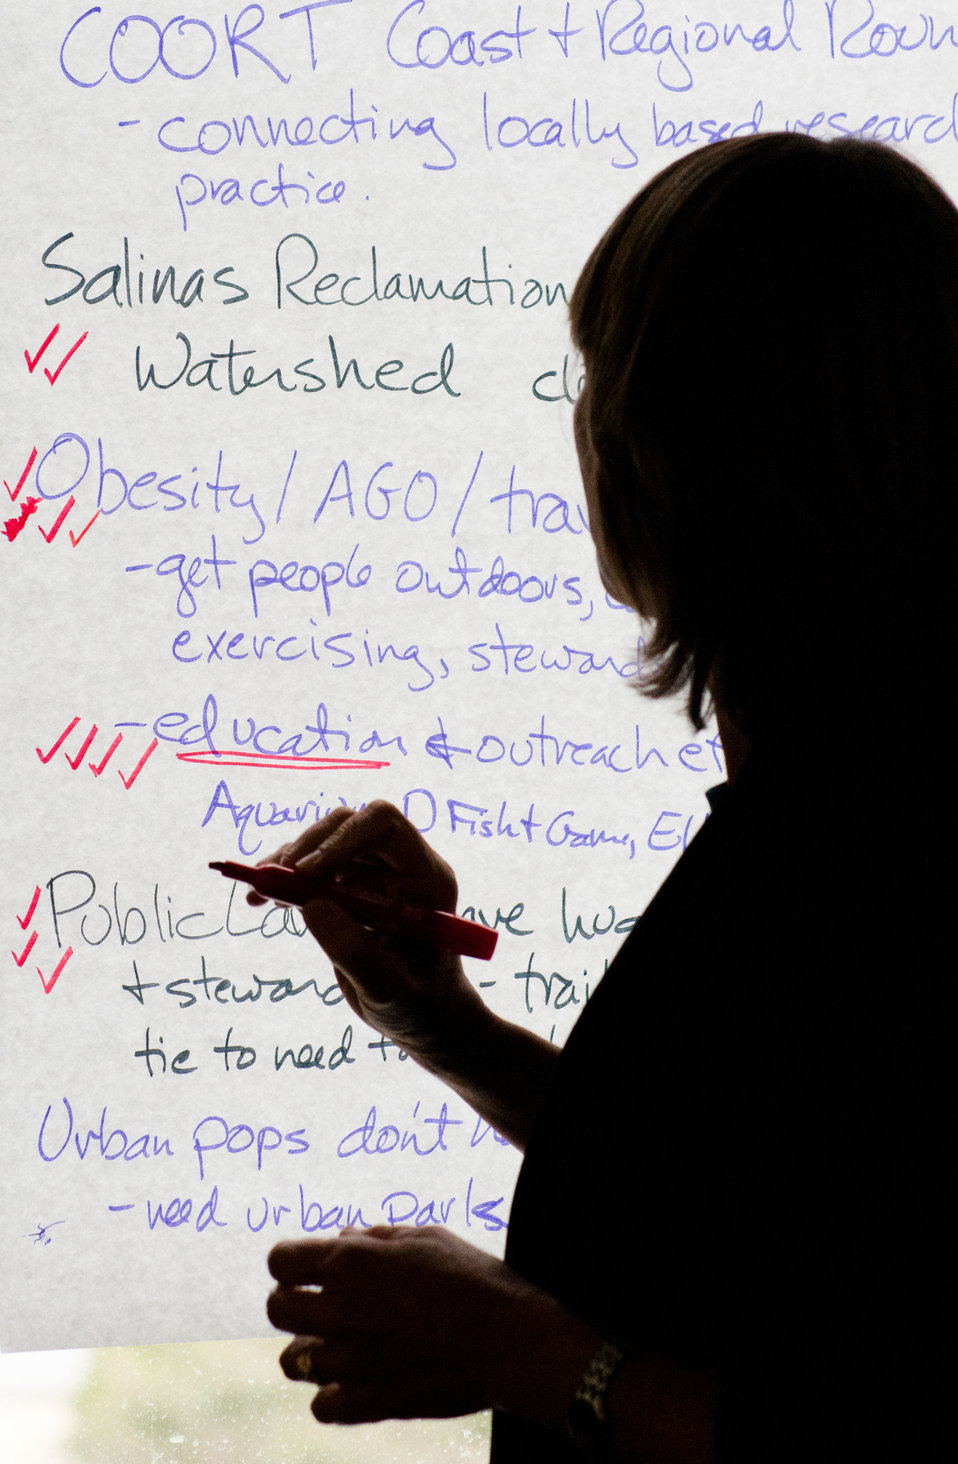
A note taker makes a check as participants identifies what they think is the most workable partnership of programs that can be created, during the America’s Great Outdoors Initiative (AGO) Monterey Bay Pilot Area Focus Session in the City of Watsonville’s Civic Plaza in California, on Friday, June 17, 2011. Federal and state resource management agencies came together to identify partnership opportunities and determine actions for protection and enhancement of water quality and publicize voluntary stewardship in the watersheds that drain into the Monterey Bay National Marine Sanctuary. This area includes the counties of San Mateo, Santa Cruz, Santa Clara, San Benito, Monterey, and San Luis Obispo. Key questions identified existing multi-county or multi land use partnerships; what is not being done; possible partnerships - collective resources to maximize the benefits to natural resources and communities; and additional resources that organizations can bring to maximize AGO. President Barack Obama signed the initiative on April 16, 2010 to develop a 21st Century conservation and recreation agenda.